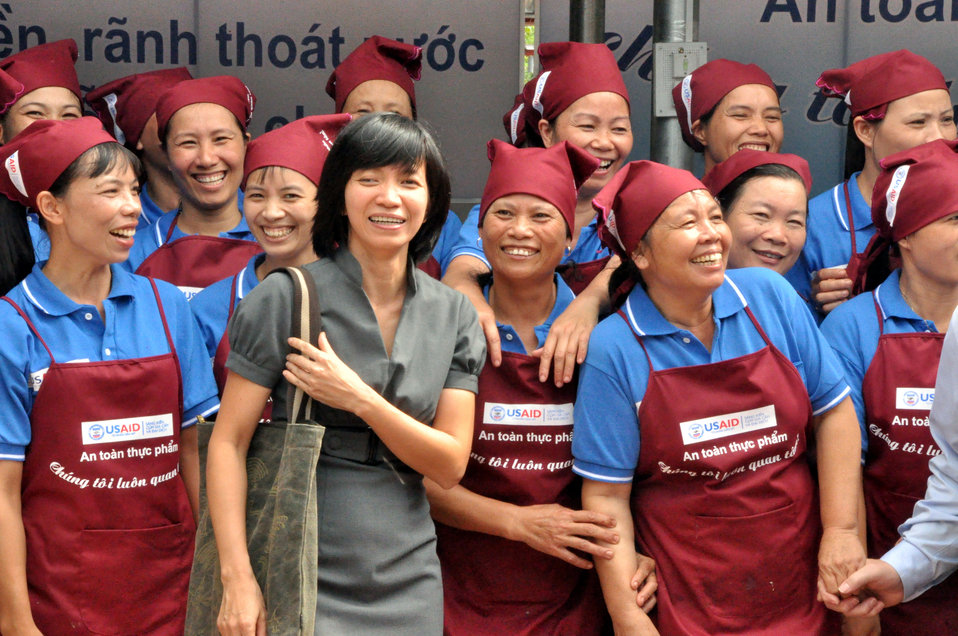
Handover Ceremony Hoa Mac Market Ha Nam

October 26, 2012